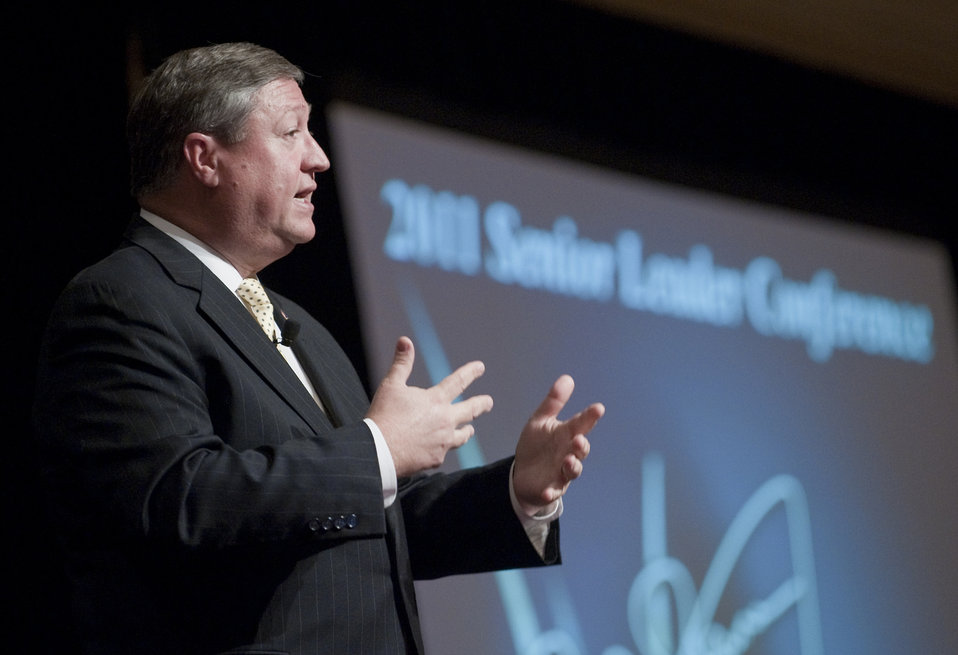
Air Force Reserve Command Senior Leader Conference

Secretary of the Air Force Michael Donley addresses Air Force Reserve Command senior leaders May 16, 2011, during their annual conference in Washington, D.C.